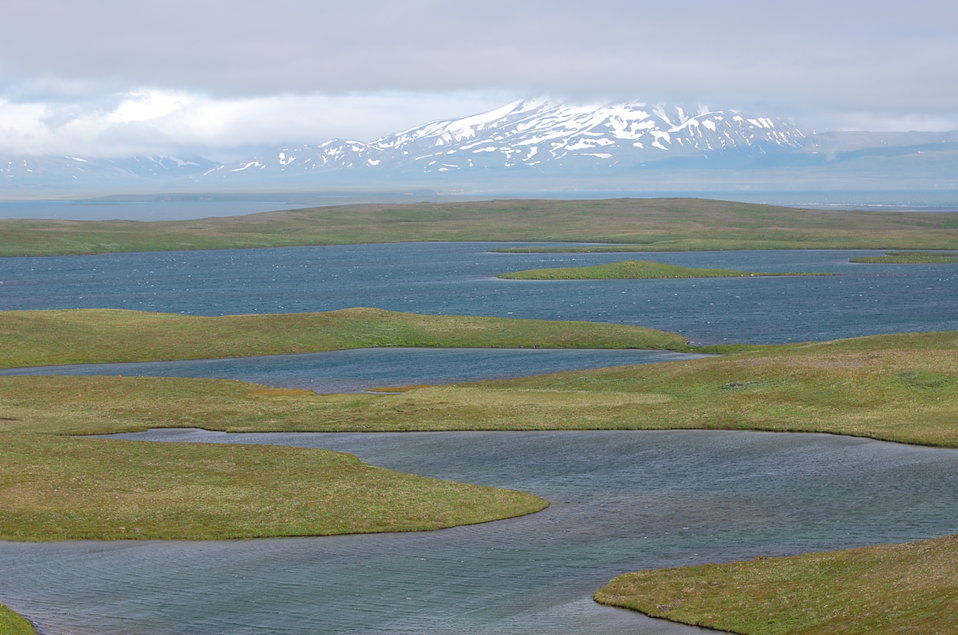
Izembek Wilderness

Wilderness north of Kinzarof Lagoon, Izembek National Wildlife Refuge
Photo by Kristine Sowl,
USFWS, Public Domain